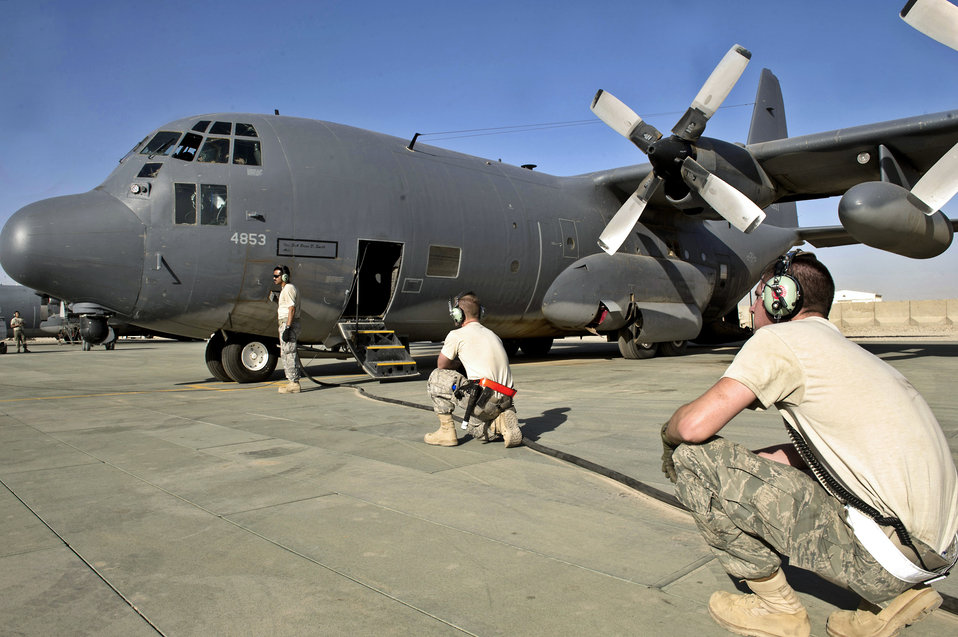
Preparing for flight

Maintainers conduct preflight operations on an HC-130P King June 3, 2011, in Afghanistan.